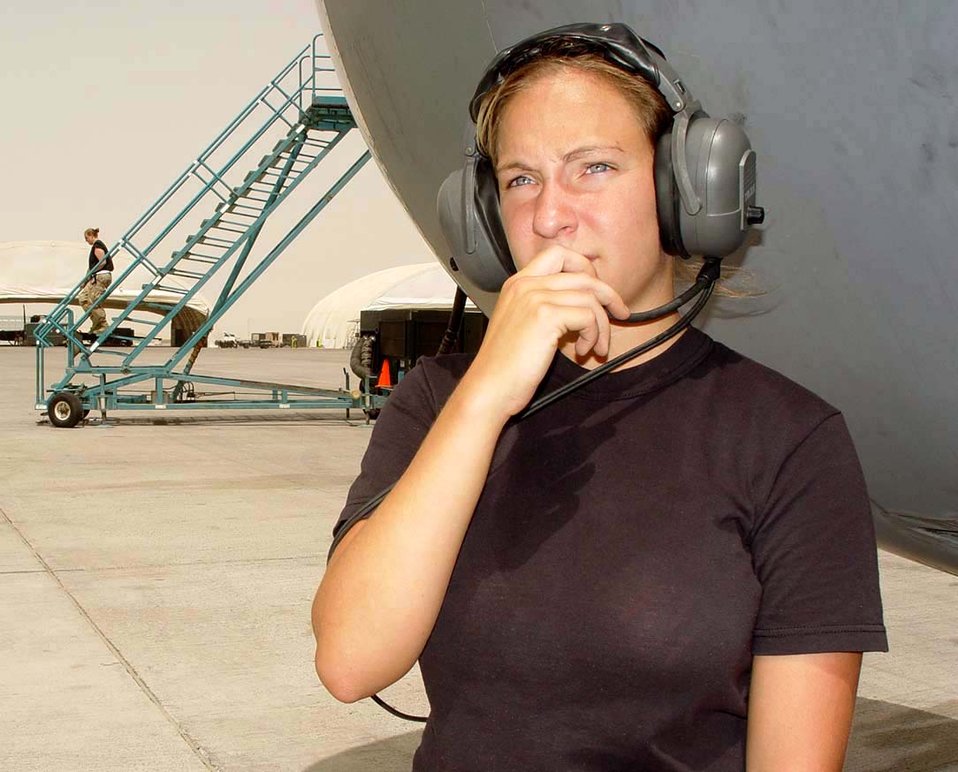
Keeping refuelers in air

SOUTHWEST ASIA -- Airman 1st Class Lacey Fontenot talks on her headset with other aircraft maintainers while preparing to launch a KC-10 Extender. She is an aerospace propulsion journeyman with the 380th Expeditionary Aircraft Maintenance Squadron at a forward-deployed location.